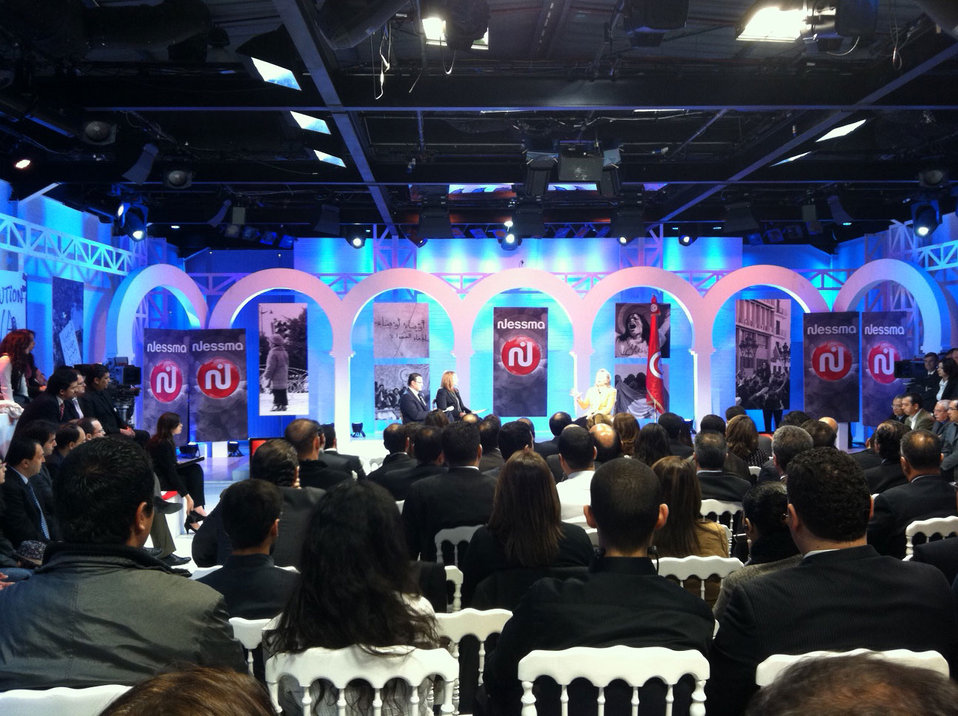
Secretary Clinton Participates in a Townterview

U.S. Secretary of State Hillary Rodham Clinton participates in a townterview with members of civil society at Nessma TV in Tunis, Tunisia, on March 17, 2011.